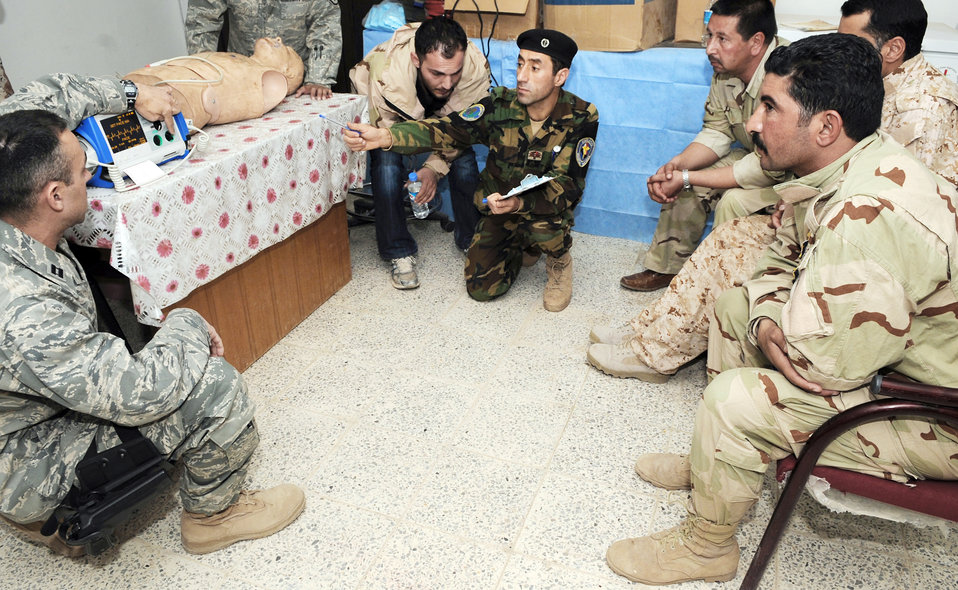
Kirkuk Airmen train Iraqi medics

Capt. Adam Christopher and Staff Sgt. Andrew Salas teach Iraqi medics how to use a defibrillator Feb. 16, 2010, at Kirkuk Air Base, Iraq. This training is part of the Expert Field Medical Batch four-week course offered to Iraqi medics at the K-1 Iraqi medical clinic in order to provide the experience they will need in real-world situations. Captain Christopher and Sergeant Salas are assigned to the 506th Expeditionary Medical Squadron.